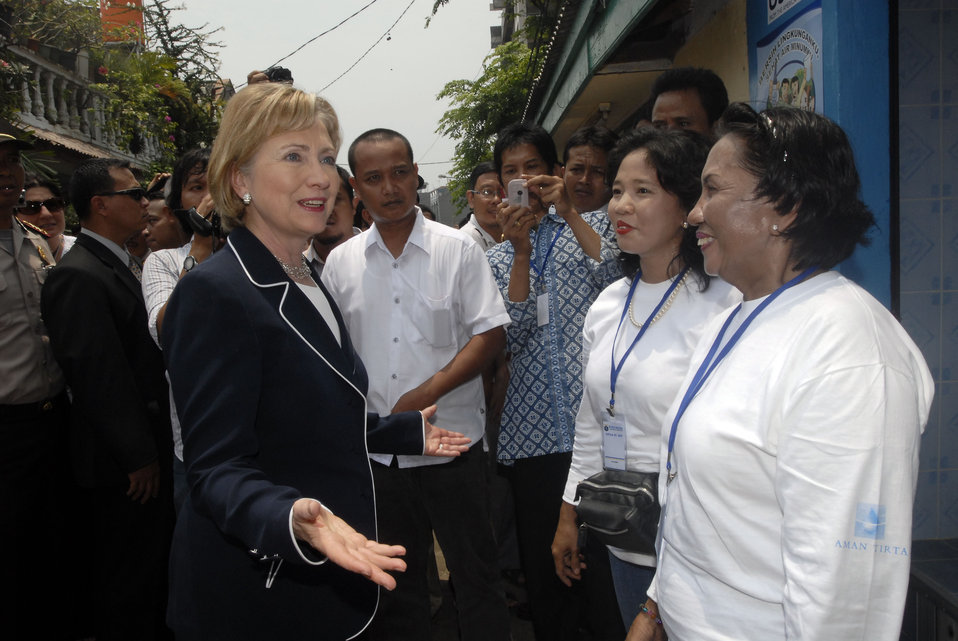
Secretary Clinton Meets With NGO Activists

Secretary Clinton meets with local NGO activists in Jakarta, Indonesia February 19, 2009.